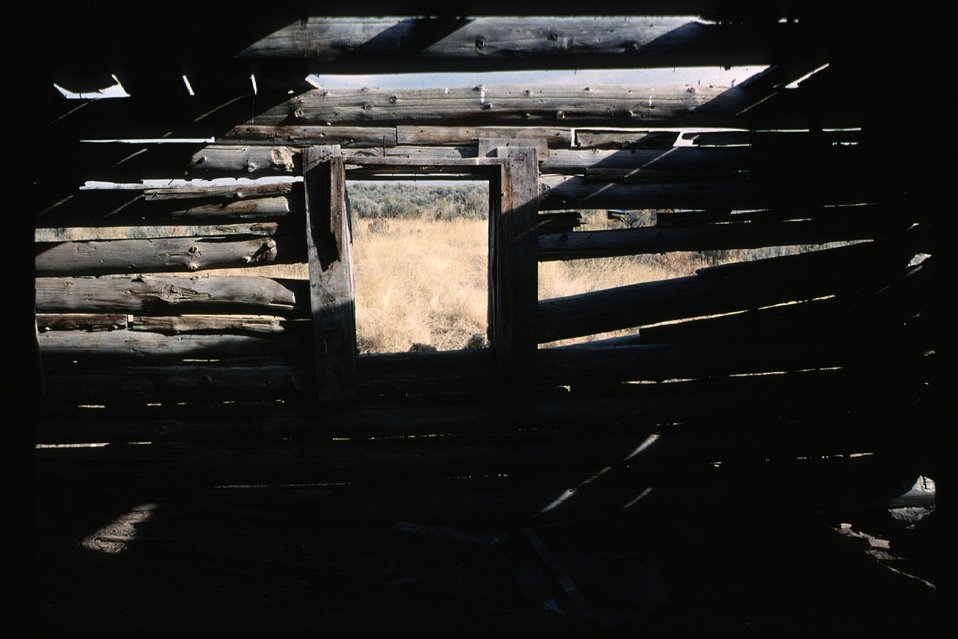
Old cabin near Oregon Trail Four Rivers Field Office LSRD Lower Snake River District